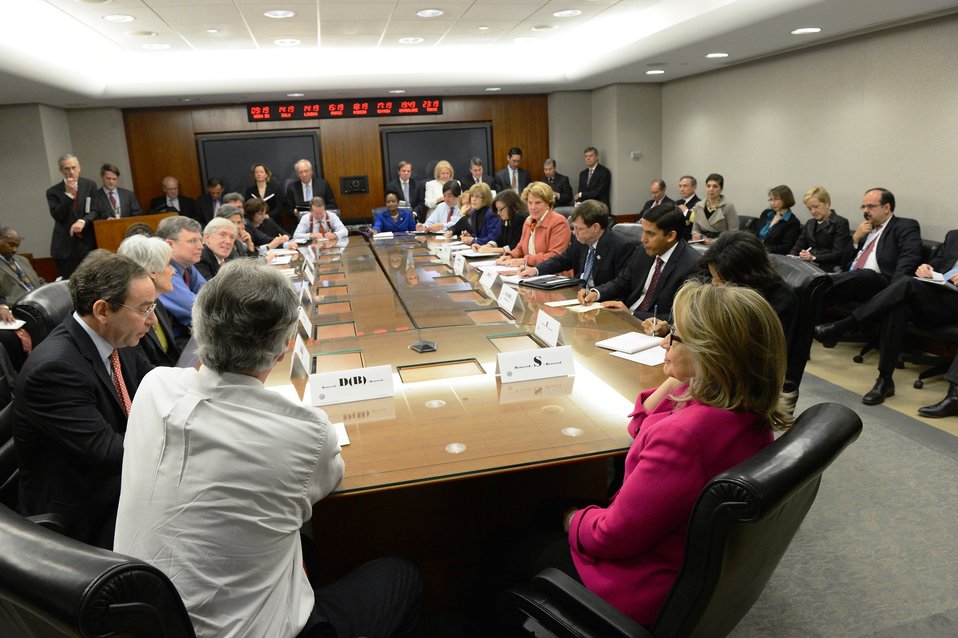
Secretary Clinton Meets With State Department Senior Leadership

U.S. Secretary of State Hillary Rodham Clinton, returning to work, meets with the State Department's senior leadership in Washington, D.C., January 7, 2013.